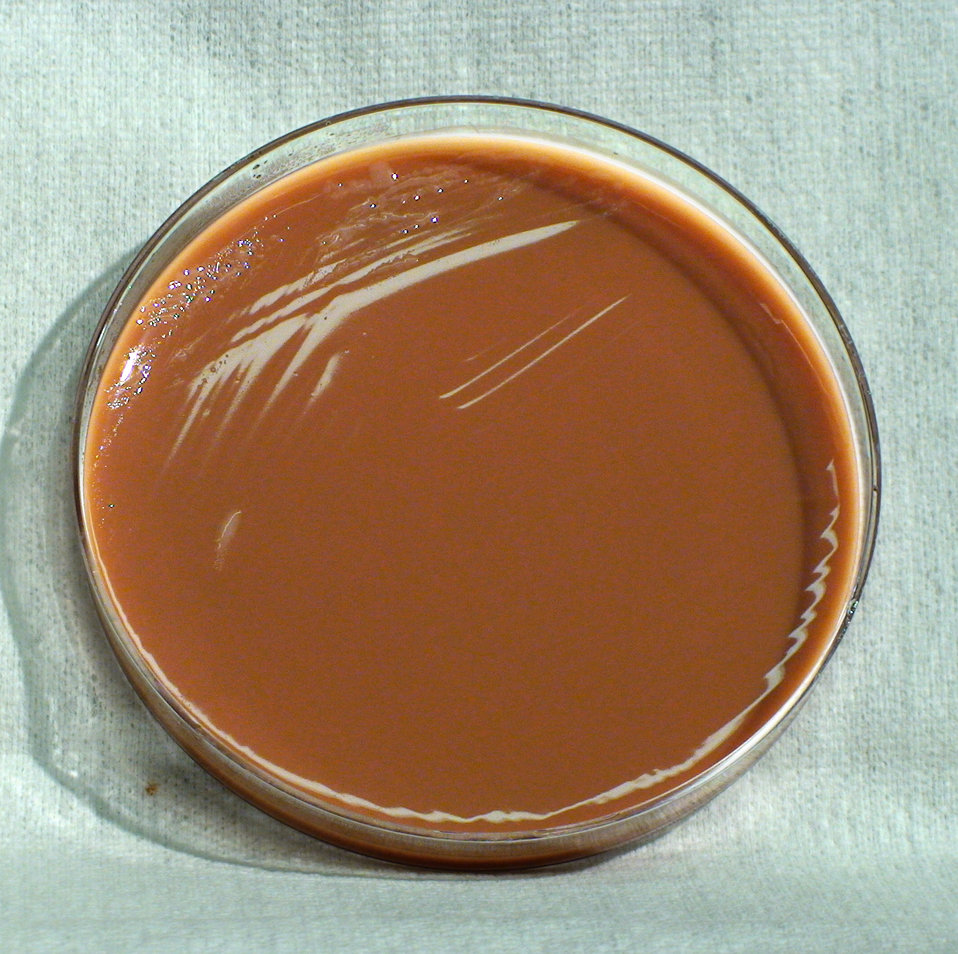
This photograph depicts the colonial morphology displayed by Gram-negative Francisella tularensis bacteria, which was grown on a medium of modified Thayer-Martin (MTM) agar, for a 48 hour time period, at a temperature of 37�C. Take a look at PHIL 12444 and 12445, which depict the appearance of F. tularensis colonies grown on the same medium, and at the same temperature, but for half the time (24hr). Also see PHIL 12447, for the appearance of bacterial colonies, again, grown on the same medium, and at the same temperature, but for a greater time period (72hr). This bacterium is both an animal, and a human pathogen, and is responsible for causing the disease known as tularemia.